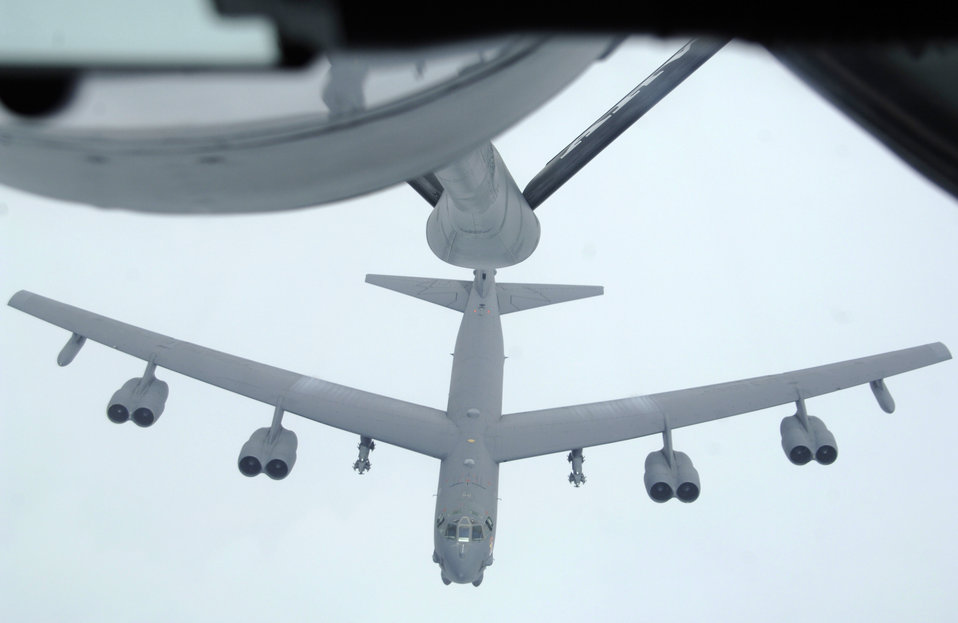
B-52s maintain global reach

A B-52 from the 23rd Expeditionary Bomb Squadron climbs into position during a recent air refueling mission near Andersen Air Force Base, Guam.